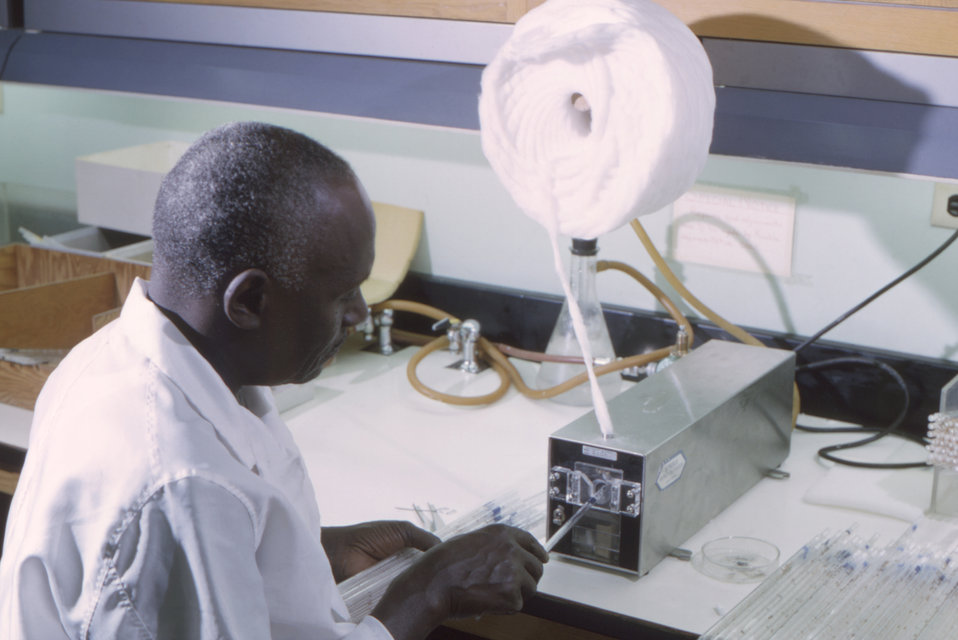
This historic 1965 image depicted a Centers for Disease Control's laboratory technician as he was operating a Kimble� automatic pipette plugger.